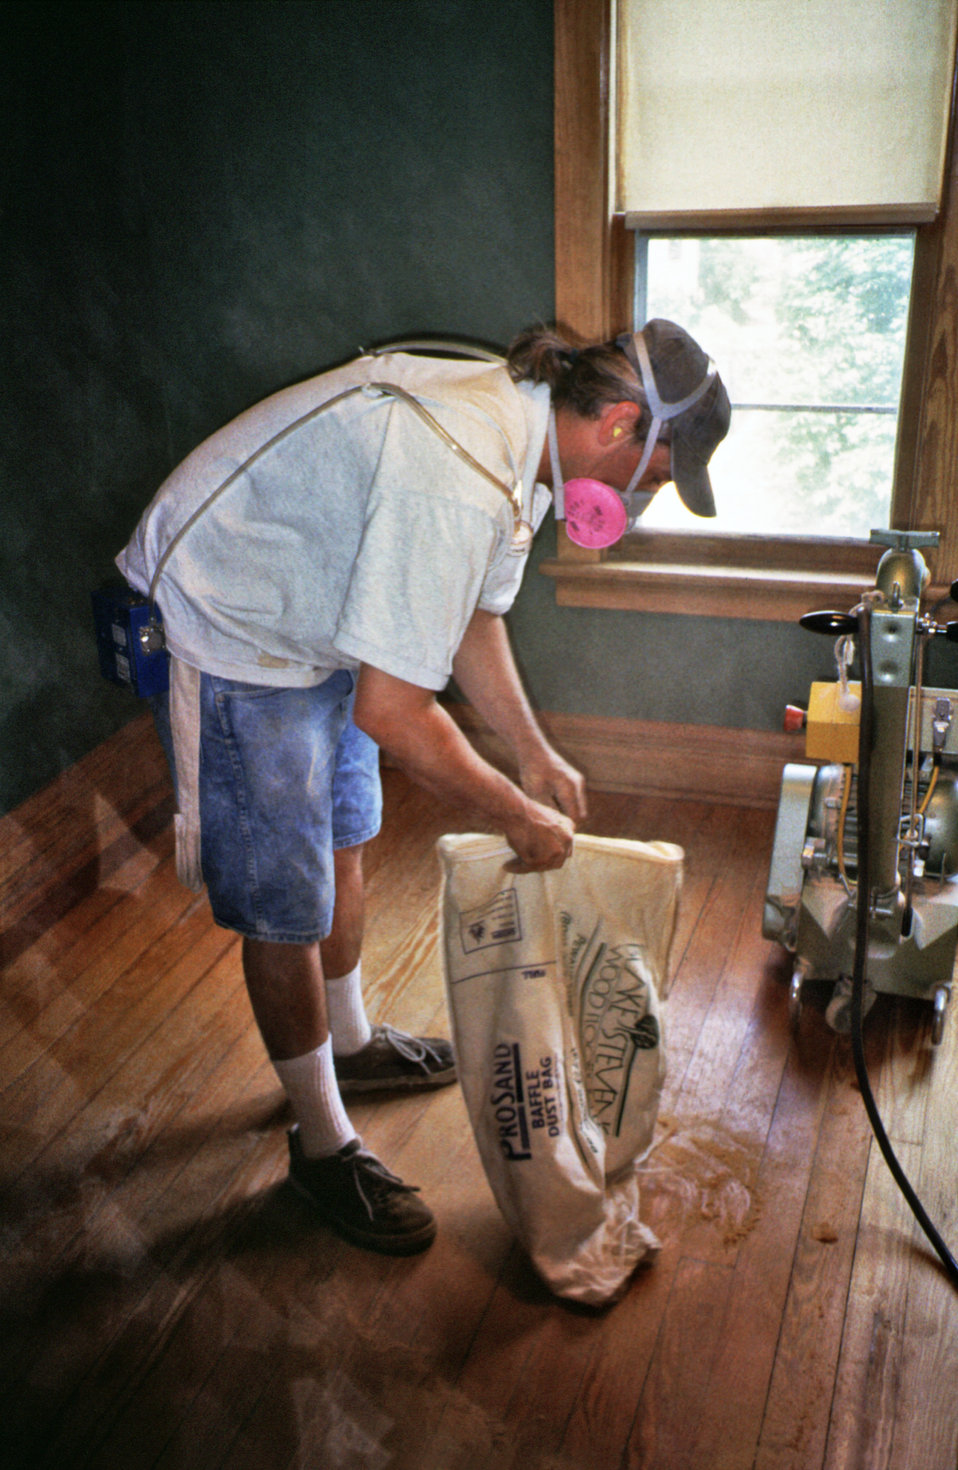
This 2000 photograph depicted a worker as he rough sanded a hardwood floor in a home in Madison, WI in preparation of refinishing its lead-based varnish surface.